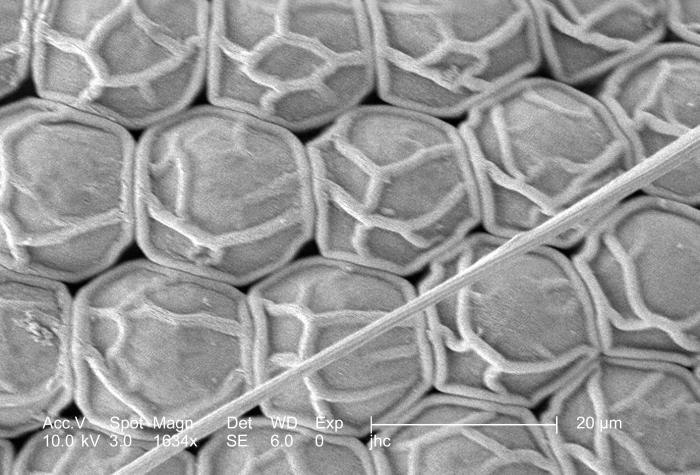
At a relatively high magnification of 1634x, this 2006 scanning electron micrograph (SEM) revealed some of the ultrastructural morphologic surface features of the compound eye of an Anopheles gambiae mosquito. Note the wondrous construct of the mosquito's multifaceted eye with its numerous subunits known as "ommatidia", which when synergistically unified, provide the insect with a mosaic representation of its environment.As the main sensory region of the insect's body, besides the eyes, the head contains a pair of long, many-segmented antennae, which are specialized for acquiring sensory information and for feeding, and are important for detecting host odors as well as odors of breeding sites where females lay eggs. The head also has an elongate, forward-projecting proboscis used for feeding, and two sensory palps.